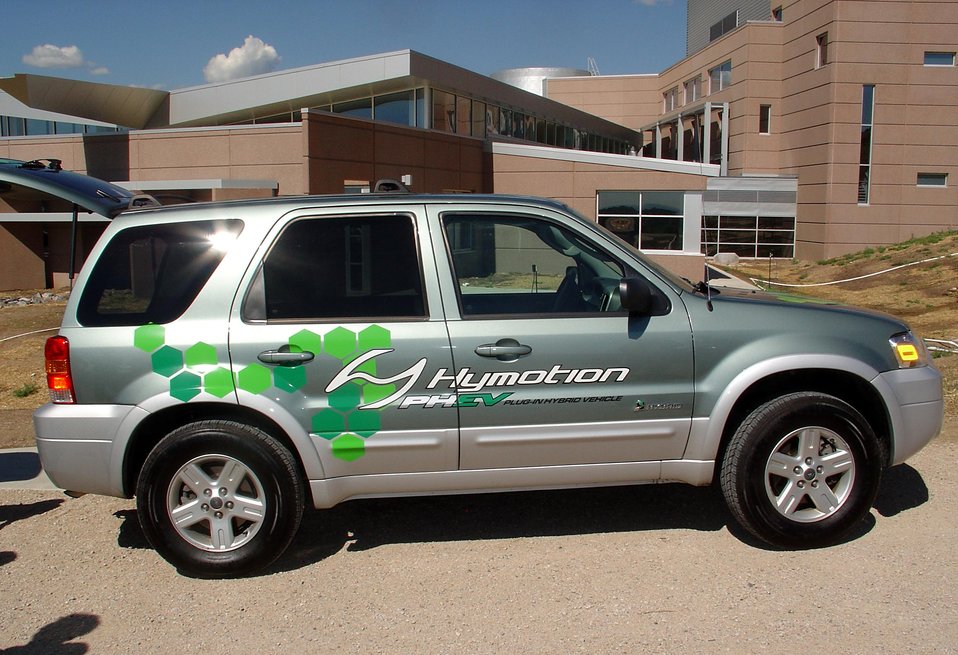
PICTURED IS A FORD ESCAPE HEV, A HYMOTION PLUG-IN HYBRID ELECTRIC VEHICLE.

AS PART OF THE ADVANCED VEHICLE SYSTEMS PROJECT AT NREL, THIS IS A PLUG-IN HYBRID ELECTRIC VEHCILE DEVELOPED BY HYMOTION IN TORONTO, CANADA. IT CAN PROVIDE HYBRID VEHCILES WITH 100 MPG FUEL EFFICIENCY AND FIGHT CLIMATE CHANGE SIMULTANEOUSLY. ADVANTAGES ARE BETTER FUEL ECONOMY, FEWER VISITS TO THE GAS STATION, LOWER FUEL COSTS, LESS POLLUTION AND LONGER RANGE IN ALL-ELECTRIC MODE. IT WORKS BY A SMART CHARGER, POWER ELECTRONIC AND BATTERY, THAT IS SMALLER AND LIGHTER THAN FACTORY NIMH BATTERY BOX. IT IS MADE POSSIBLE BY THE LITHIUM ION POLYMER BATTERY TECHNOLOGY THAT HYMOTION USES IN THEIR PLUG-AND-PLAY PHEV SYSTEM.